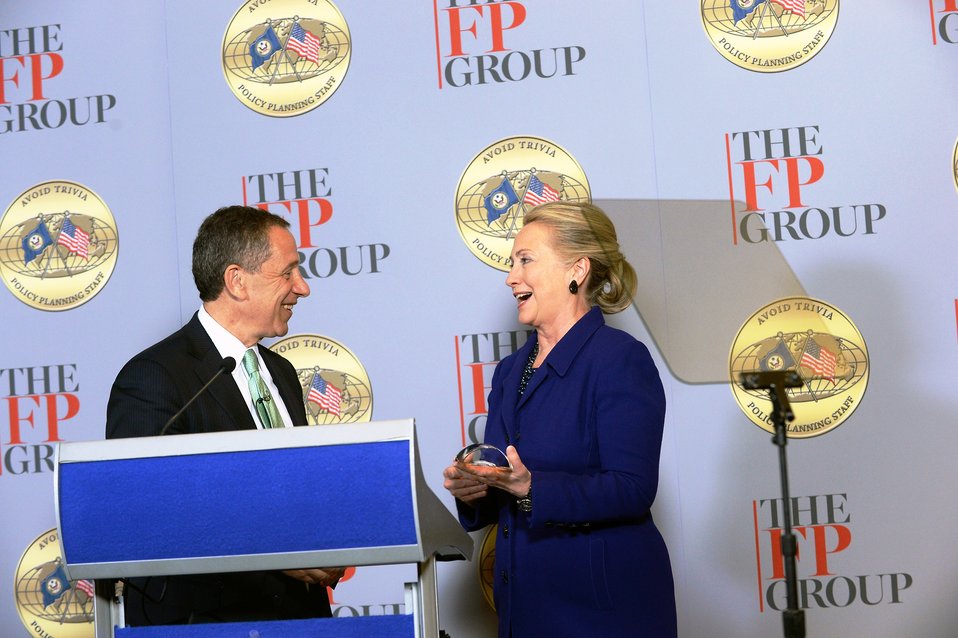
Secretary Clinton at Foreign Policy Group’s Transformational Trends 2013

U.S. Secretary of State Hillary Rodham Clinton prepares to deliver remarks at Foreign Policy Group’s Transformational Trends 2013 at the Newseum in Washington, D.C., November 29, 2012.